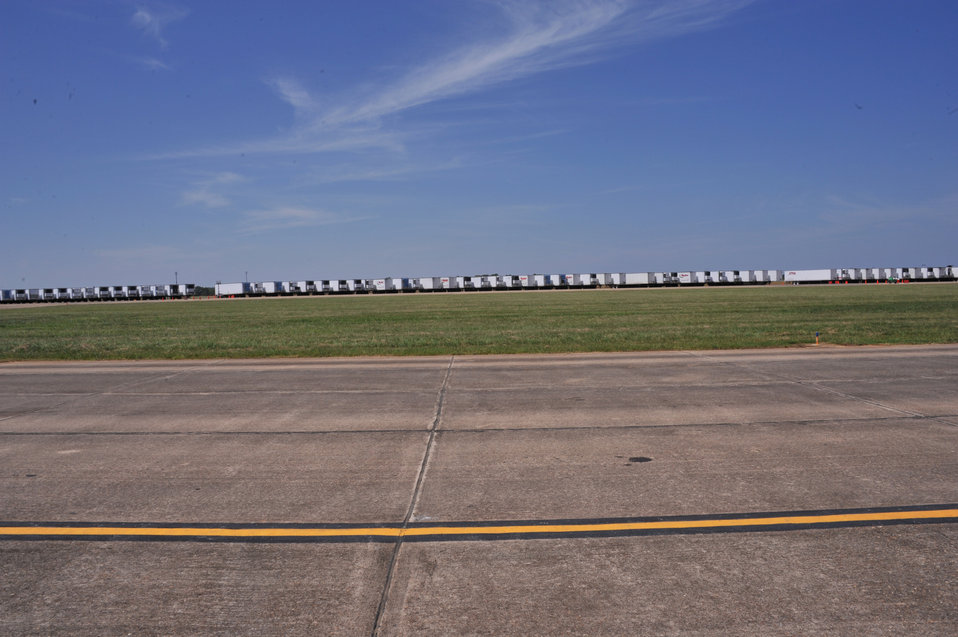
Maxwell, FEMA prepare relief supplies for Tropical Storm Isaac

Maxwell Air Force Base hosts Federal Emergency Management Agency trucks waiting to assist areas in the southeast effected by Tropical Storm Isaac, Aug. 27. Beginning Saturday, more than 120 semi-trucks filled with water, food, medical equipment, blankets, cots and generators big enough for hospitals began flowing into the base. FEMA trucks hold supplies to include water, cots, food and medical supplies.